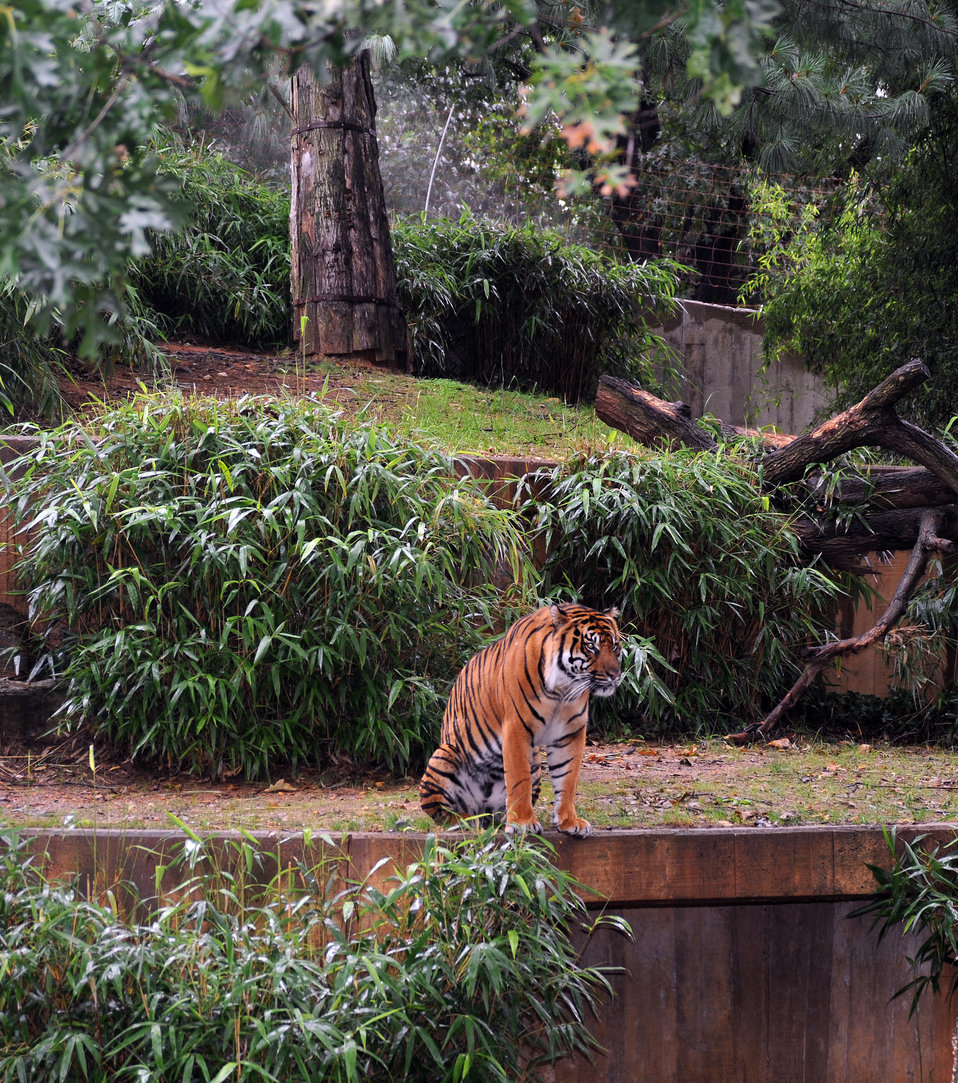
Save Vanishing Species Stamp First Day of Issue